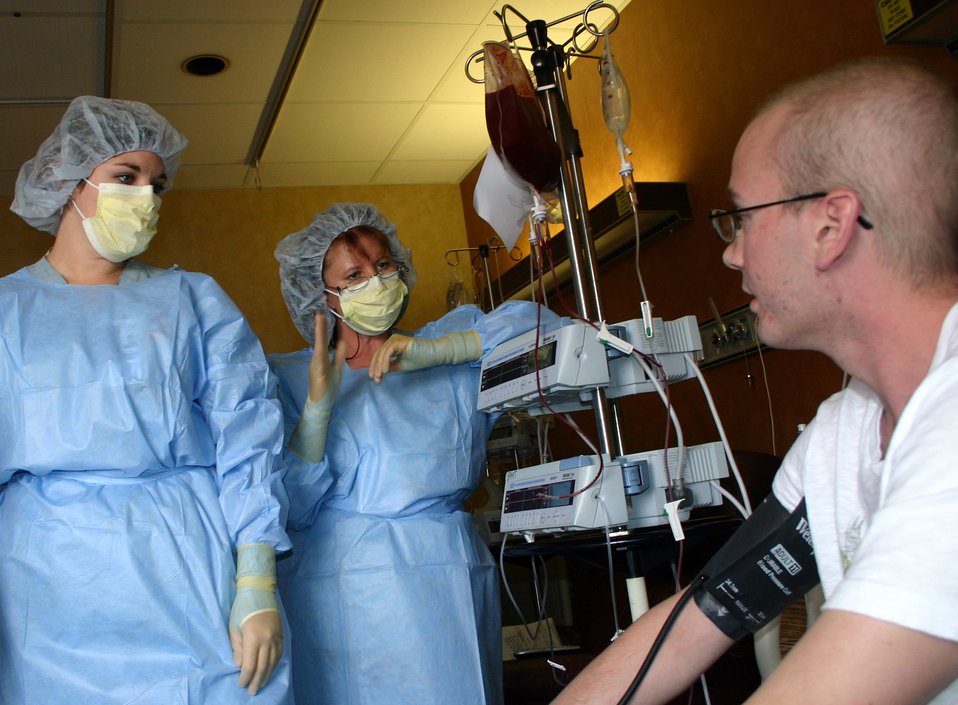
From Iraq to Wilford Hall, nurse, patient meet again

(From left) 2nd Lt. Joanna Moore and Tonia Beltran explain the bone marrow transplant procedure to Army Sgt. Joe DeLashmutt at Wilford Hall Medical Center, Lackland Air Force Base, Texas, on July 7. The bone marrow, a thick, red bloodlike substance, is given intravenously. The nurses are bone marrow transplant nurse specialists.